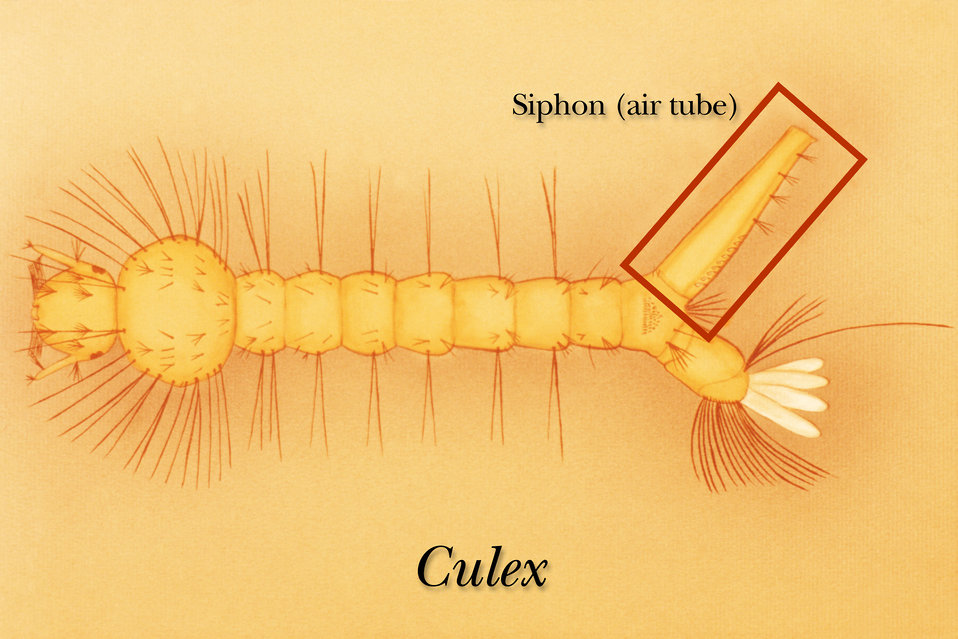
Illustration identifying the siphon, or air tube of a Culex mosquito larva.